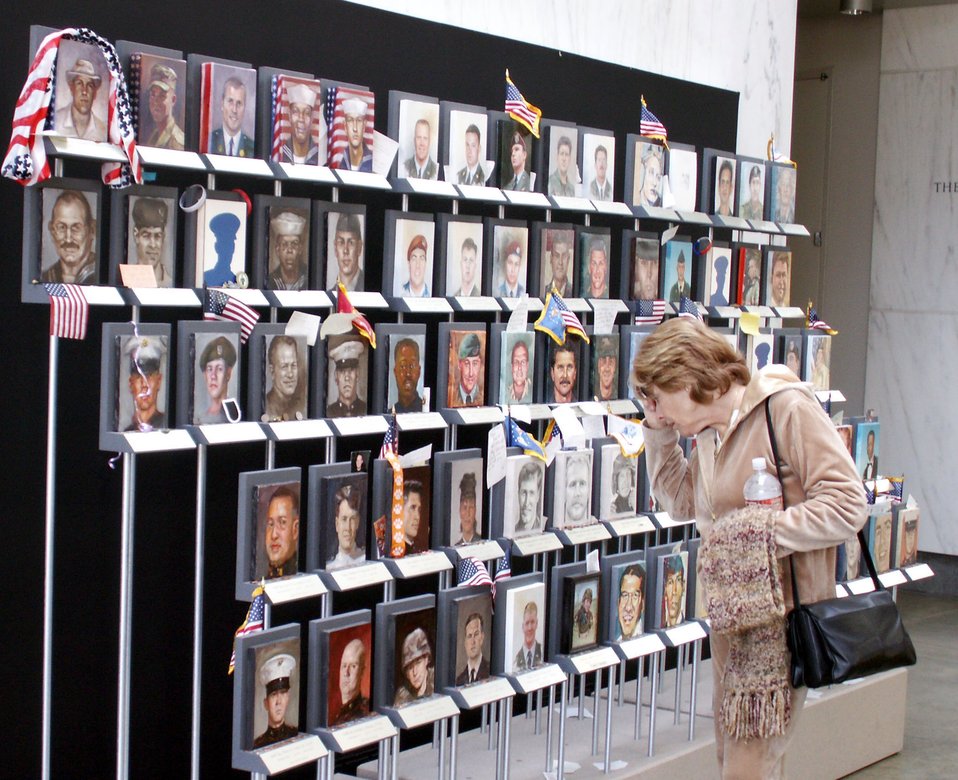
'Faces of the Fallen'

Sandra Henriks of Woodland Hill, Calif., stops to read some notes left at the